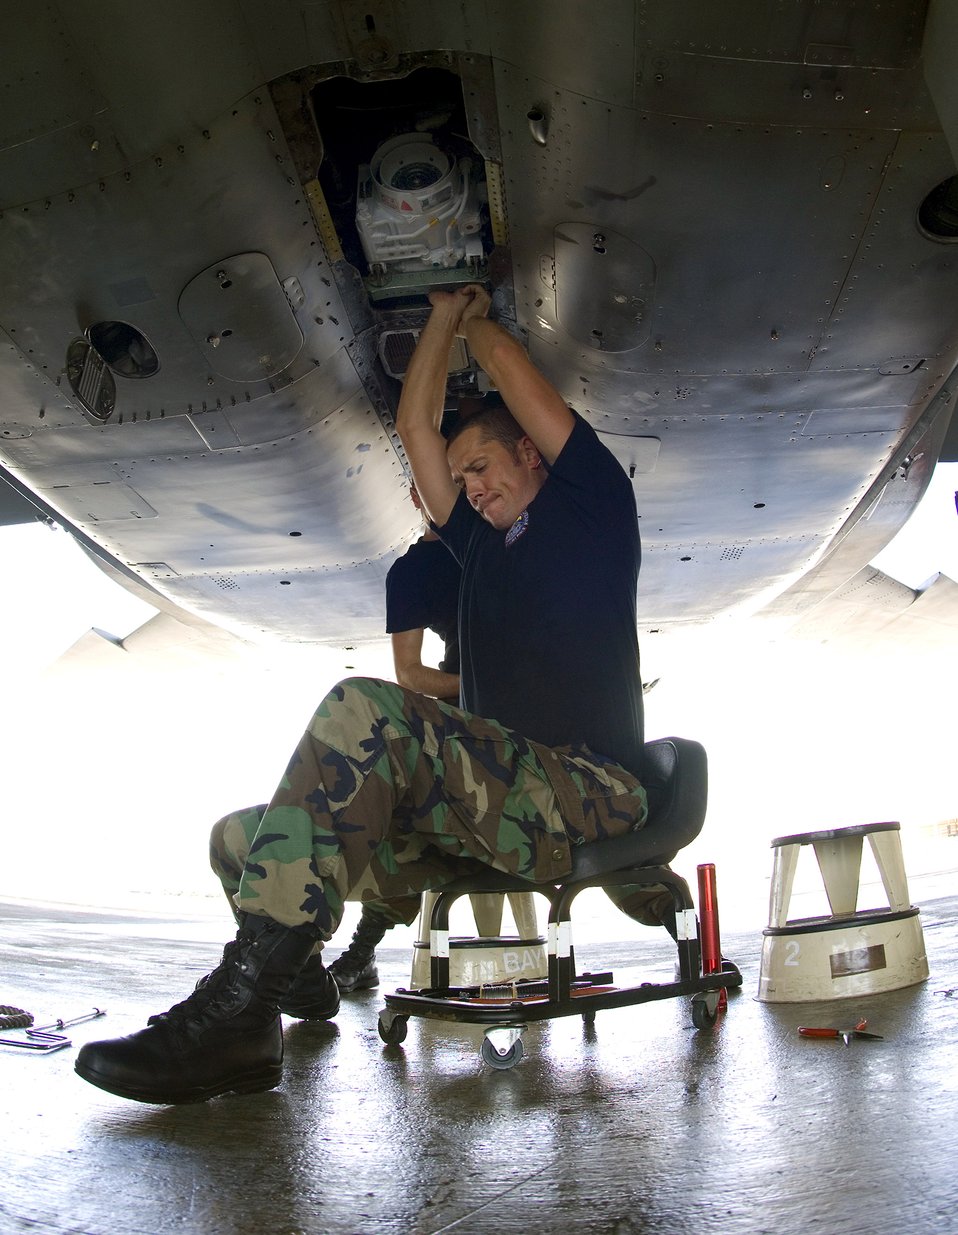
Guard unit helps protect nation

Crew chief Tech. Sgt. Gary Holland works to replace a bad central gear box on an alert F-15 Eagle Oct. 2 to get it back to flying status. Sergeant Holland is a memeber of the 125th Fighter Wing, Det. 1,at Homestead Air Reserve Base, Fla. the detachment provides the Continental NORAD Region commander rapid response to invasions of the sovereign airspace of the U.S. and responds with appropriate defense measures against all hostile actions directed at the people and property of the U.S.